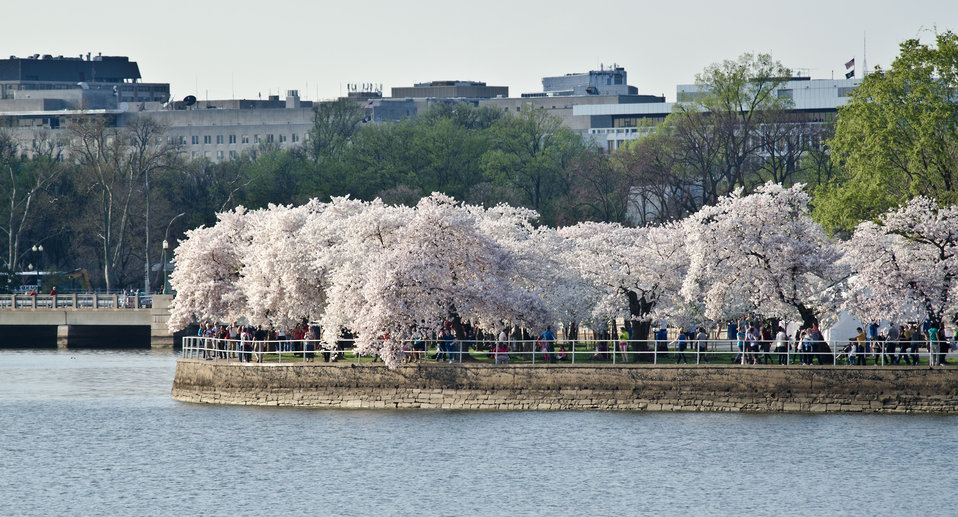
Cherry blossoms at the Tidal Basin in Washington, D.C., on Tuesday, March 20, 2012.